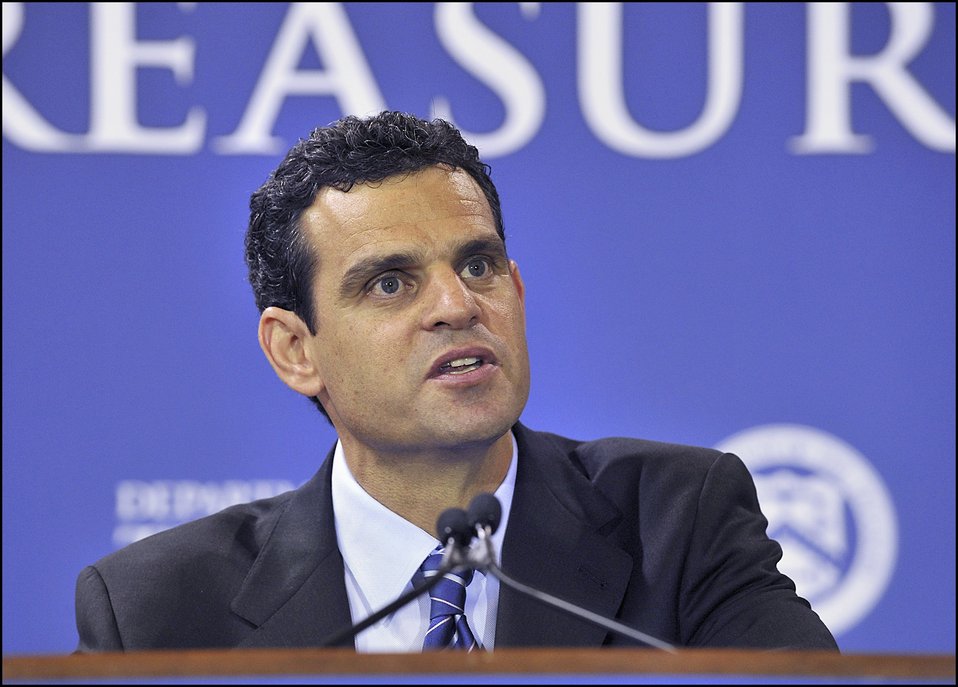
Ten Years Later: Progress and Challenges in Combating Terrorist Financing Since 9/11, 09/08/11

In his remarks, Under Secretary for Terrorism and Financial Intelligence David S. Cohen said, 'In the decade since 9/11, the United States government has undertaken an unprecedented effort to unmask and choke off al-Qa’ida’s financial support networks. The strategies developed by Treasury’s Office of Terrorism and Financial Intelligence (TFI) have placed the Department squarely within our country’s national security community and at the forefront of the battle to deprive al-Qa’ida –and terrorists the world over – of the financial wherewithal to operate.'